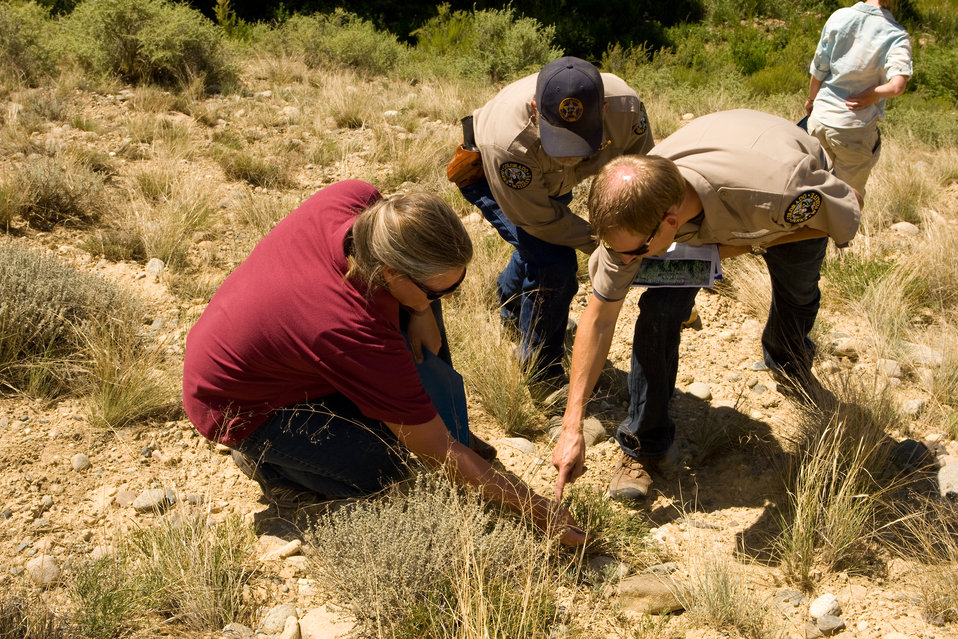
Colorado Rare Plant Conservation Initiative

The Colorado Rare Plant Conservation Initiative (RPCI) is a partnership of 23 statewide and regional agencies, private organizations, and academic institutions working to conserve 121 rare plants in Colorado. As part of these efforts the group developed the Colorado Rare Plant Conservation Strategy, developed Best Management Practices to reduce energy development impacts, addressed climate change, and developed focused strategies for the conservation of individual species at eight priority landscapes. The group has also worked to coordinate volunteer efforts for plant conservation across the state.